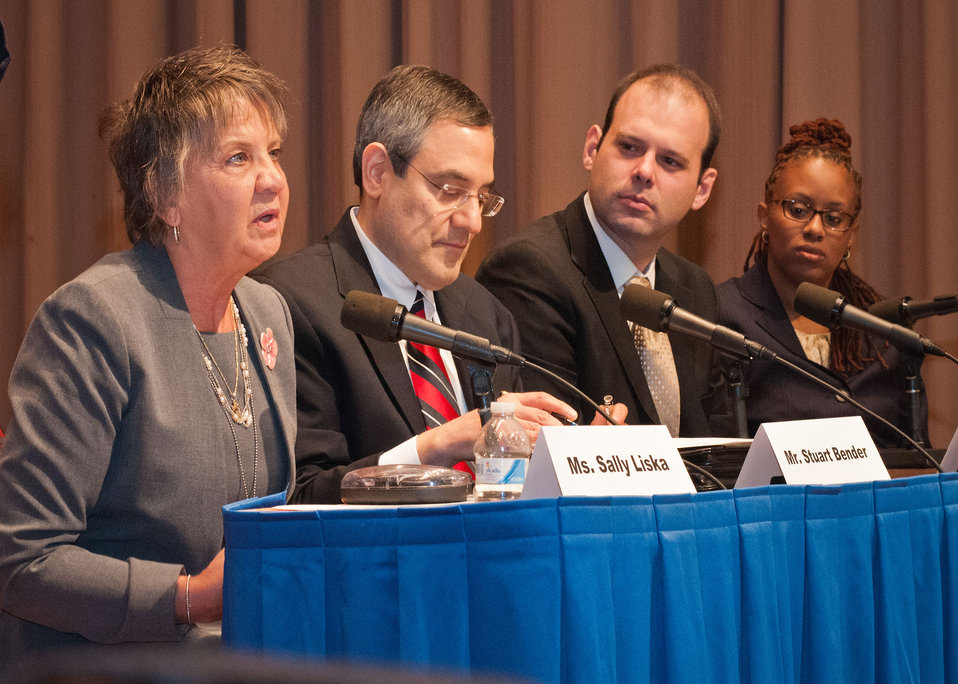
(L to R) U.S. Department of Agriculture (USDA) Office of the Executive Secretariat employee Sally Liska, USDA Office of Ethics employee Stuart Bender, USDA Office of Ethics employee Jason Goitia, and USDA Office of Communications employee Justice Wright sit on the panel ‘Hiring and Employing Individuals with Disabilities at the USDA 2012 National Disability Employment Awareness Month celebration in the Jefferson Auditorium at USDA in Washington, D.C. on Wednesday, Oct. 17, 2012. The theme for the event was, “A Strong Workforce is an Inclusive Workforce: What Can You Do?